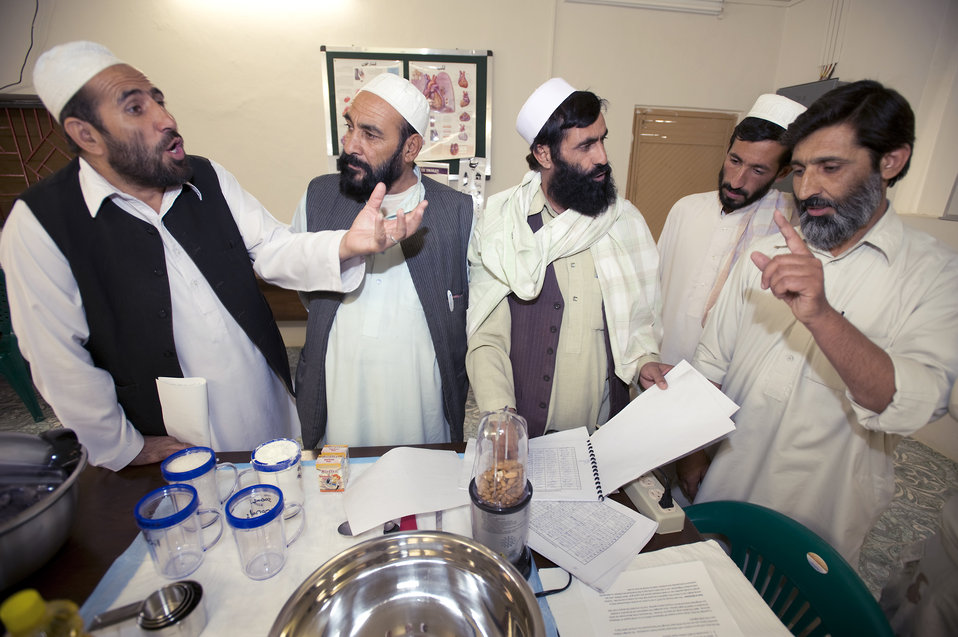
Servicemembers help malnourished Afghan children

Dr. Zamarai Sultan (right) discusses results he has seen using